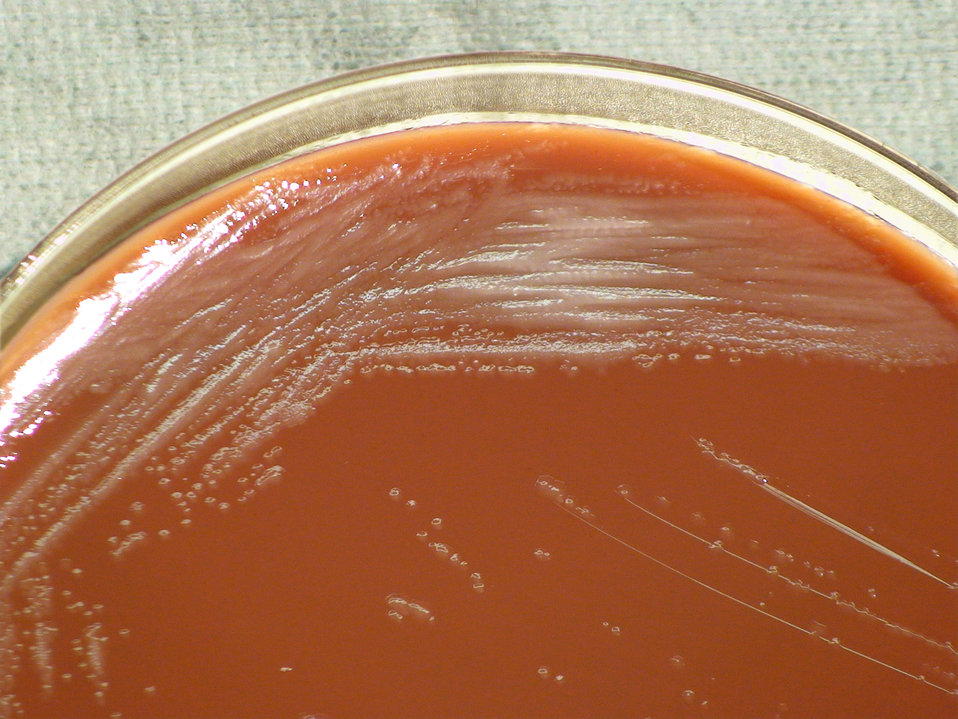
A closer view of PHIL 12417, this photograph depicts the colonial morphology displayed by Gram-negative Burkholderia thailandensis bacteria, which was grown on a medium of chocolate agar, for a 24 hour time period, at a temperature of 37�C. See both PHIL 12403 and 12404 for a view of this bacterial specie, grown on the same medium, at the same temperature, however, for a greater amount of time (48hrs), and take a look at PHIL 12425 and 12426, which depict the B. thailandensis colonial growth, again on the same medium, and for the same cultivation time (24hrs), but at a higher temperature(42�C).